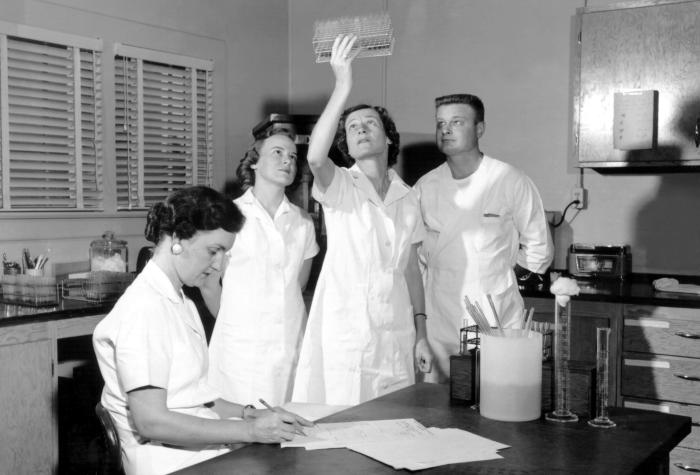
Public health advisors here join the CDC with the transfer of the Venereal Disease Control division.